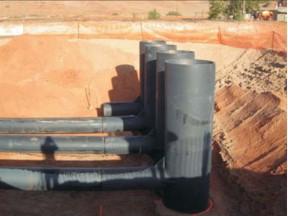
Moab restoration

At Moab, UT, restoration is a key component to completion, a new river water storage pond is being constructed to hold approximately 2 million gallons of water. The pond is lined with a geosynthetic clay liner, and a turbidity curtain or silt screen will be installed to reduce the amount of sediment in the water that is pumped from the pond. A number of fish species live in the existing storage pond, and working with US Fish and Wildlife fish will be transferred to the new storage pond.